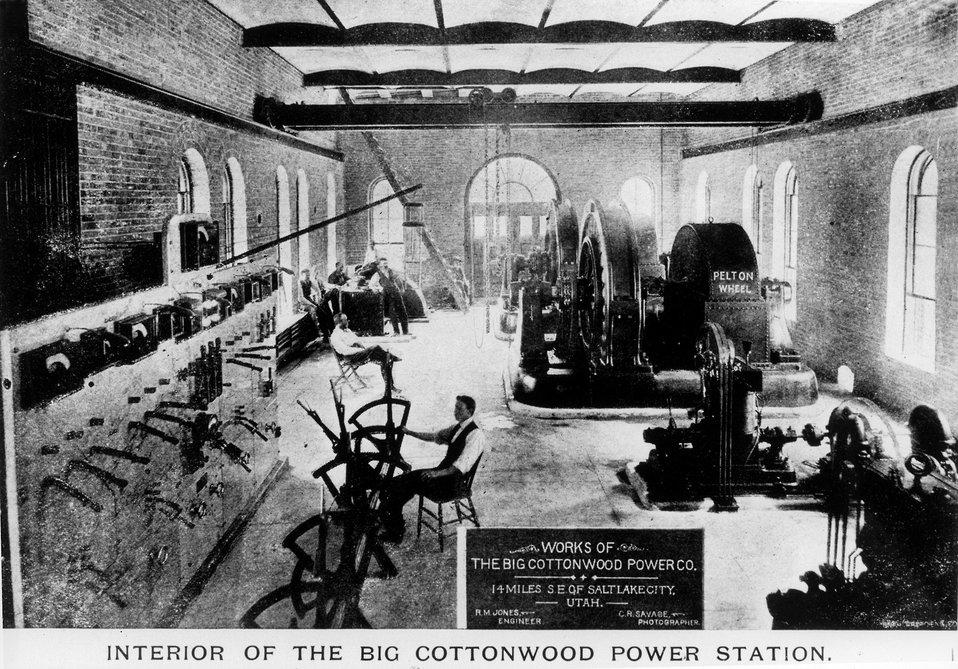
Interior of the Big Cottonwood power station.